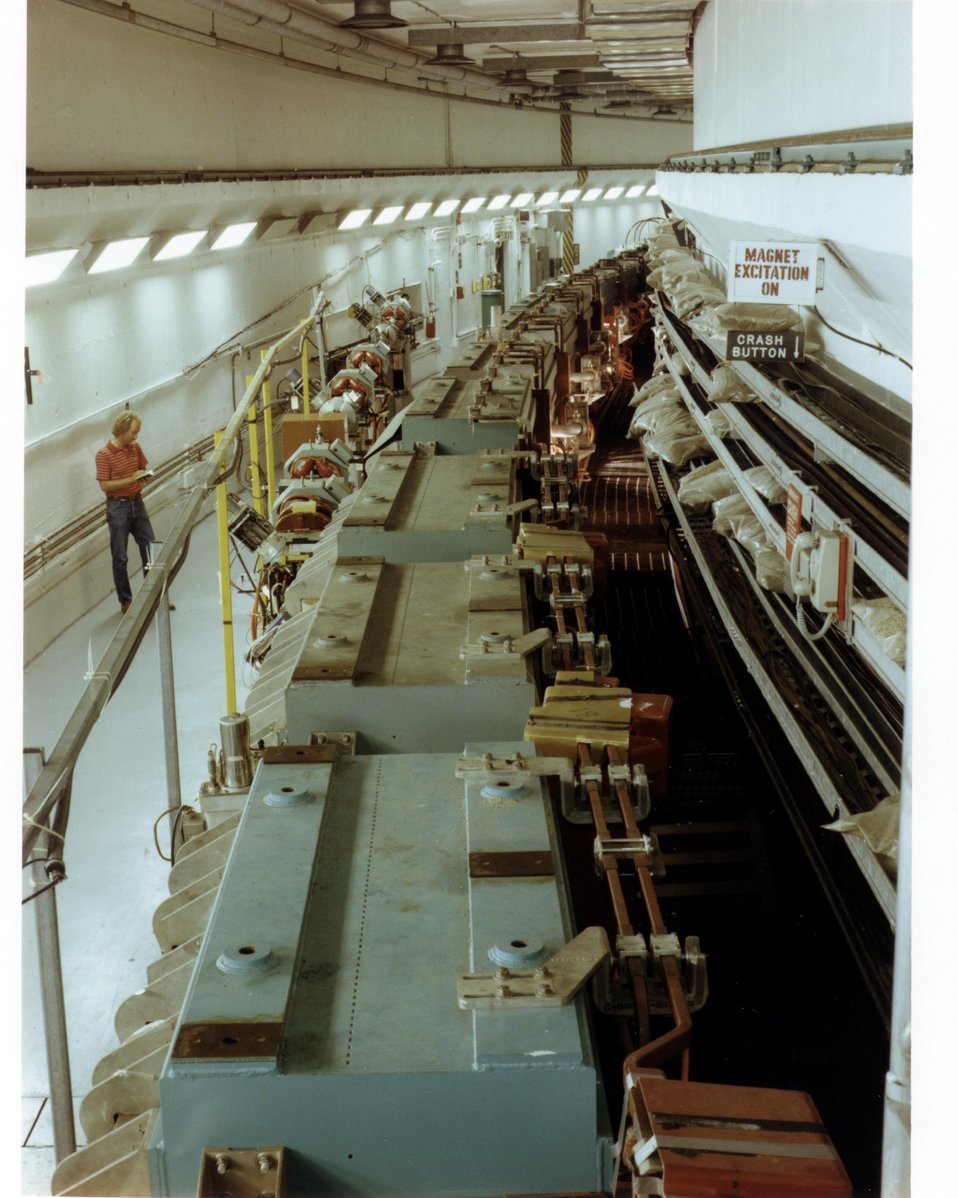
A SEGMENT OF THE AGS RING.

THE AGS ACCELERATES PROTONS (THE NUCLEI OF HYDROGEN ATOMS) TO AN ENERGY OF 30 BILLION ELECTRON VOLTS (GEV) TO PROVIDE PROJECTILES FOR SMASHING THE NUCLEUS OF OTHER ATOMS. THE ENORMOUS ENERGY RELEASED IN THIS COLLISION SCATTERS THE PRIMARY PROTONS AND THE CONSTITUENTS OF THE TARGET NUCLEUS AND ALSO RESULTS IN THE PRODUCTION OF NEW UNSTABLE SHORT LIVED PARTICLES NOT FOUND IN ORDINARY MATTER. THE STUDY OF THE SCATTERING AND PRODUCTION PROCESSES PROVIDES INFORMATION ABOUT THE CONSTITUENTS OF THE PROTON.